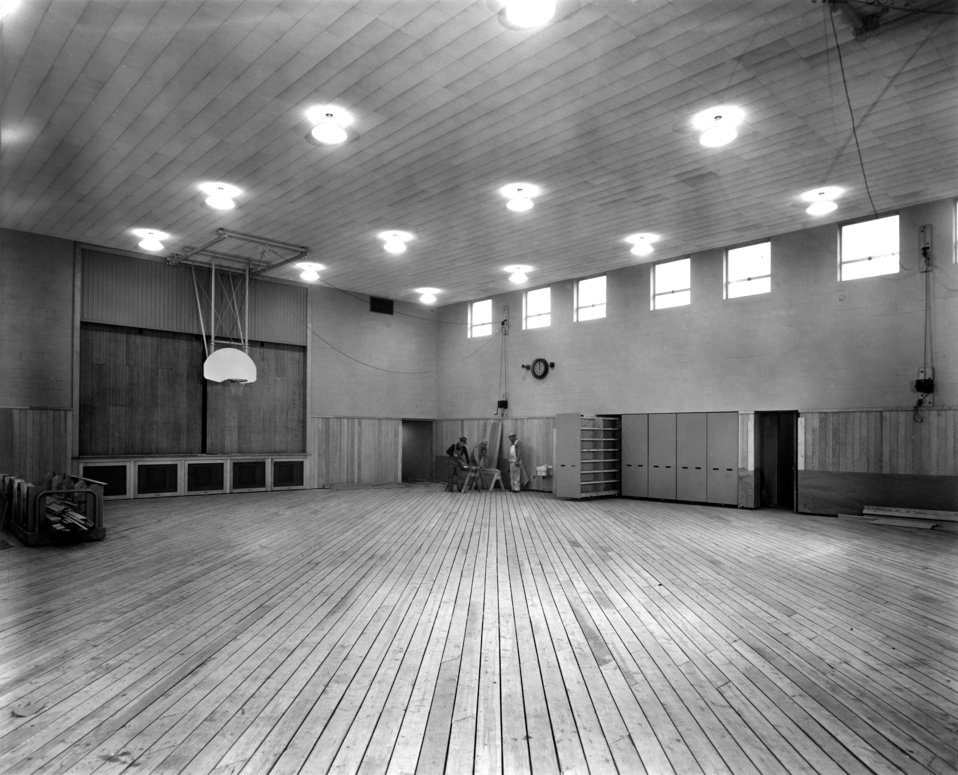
Gym Elementary School Neighborhood 11 Oak Ridge

5764-1 DOE photo Ed Wescott

Gym Elementary School Neighborhood 11 Oak Ridge Tennessee 11-25-49